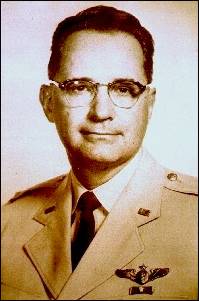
Colonel (Dr.) John Paul Stapp

1950's -- Colonel John Paul Stapp